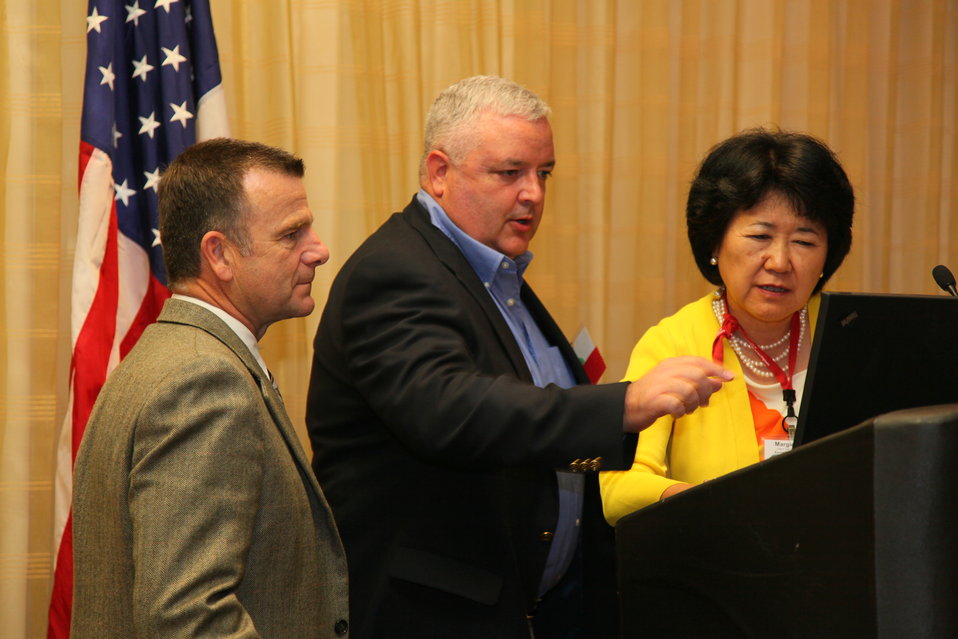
Water conference offers solutions for managing California’s complex water issues

Eugene Maak (center), a hydrology engineer with the U.S. Army Corps of Engineers Sacramento District, discusses his presentation on the Sacramento-San Joaquin Delta hydrologic management plan with Margie Namba (right), with Kennedy / Jenks Consultants, and programs chair person Mike Conrad in Sacramento, Calif., Oct. 4, 2011. Maak was discussing the plan during the Society of American Military Engineers’ Water Conference. The conference offered a venue for exchanging ideas and forming partnerships for dealing with complex California water issues ranging from water quality to unpredictable flooding events. Namba served as the moderator during the technical session.